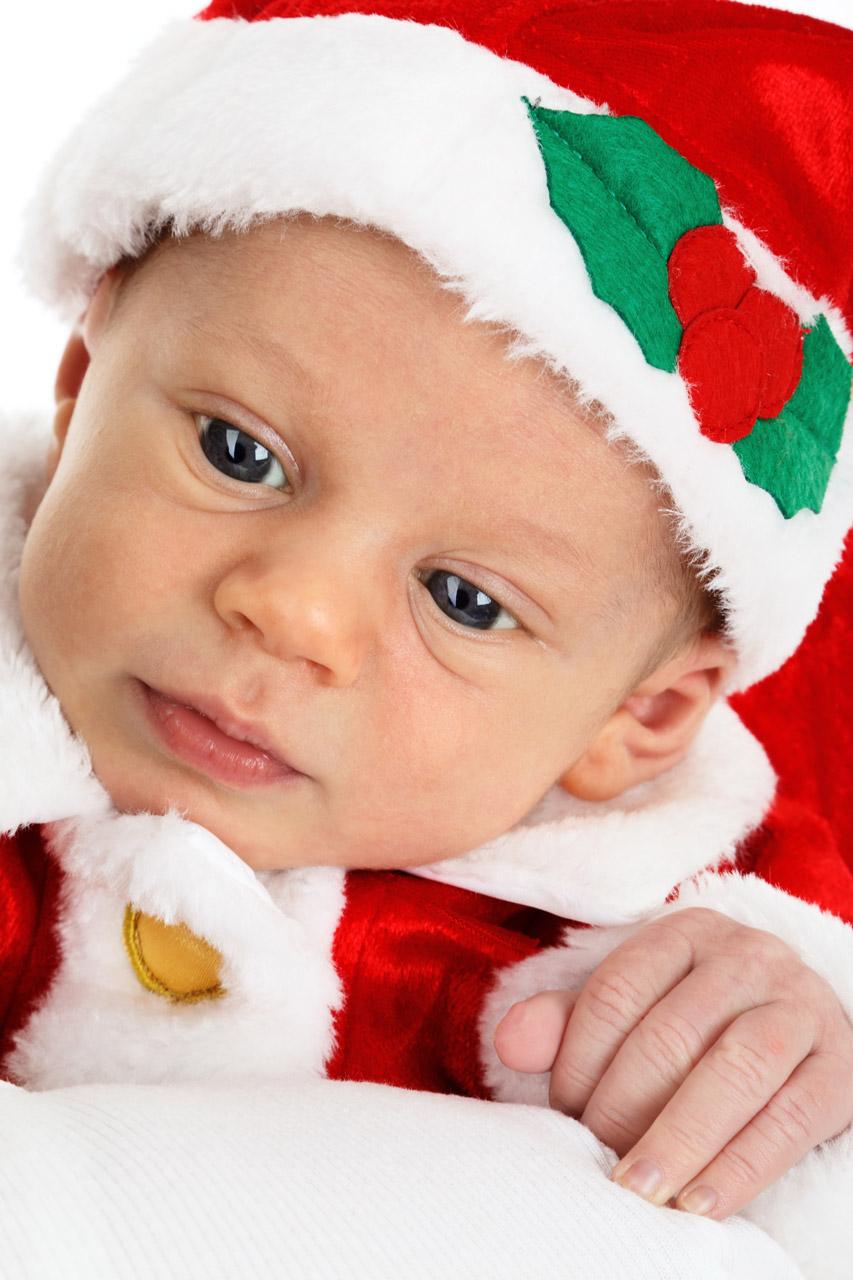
Christmas baby

Little santa looking at something.